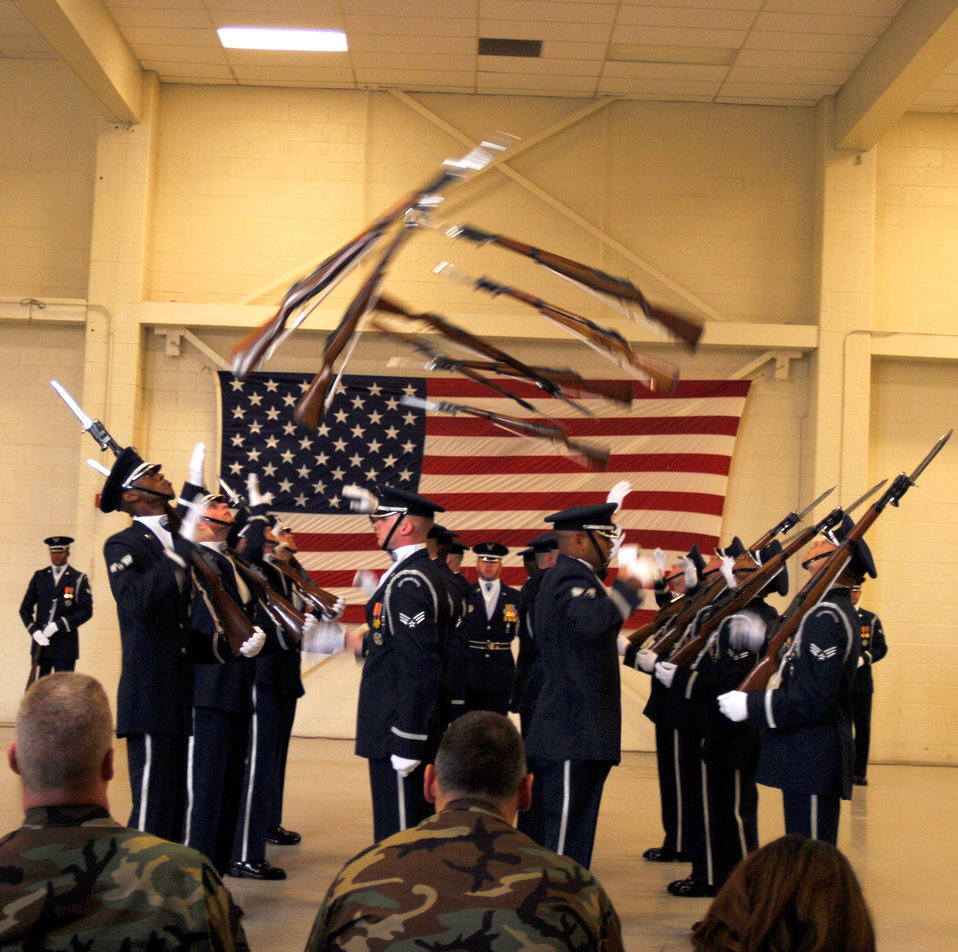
2007 Air Force Honor Guard

Air Force Honor Guard Drill Team members unveil their new 16-man performance for their 2007 drill season at Bolling Air Force Base, D.C., on Nov. 21. The team spent a month at Lackland AFB, Texas, practicing and perfecting the routine.